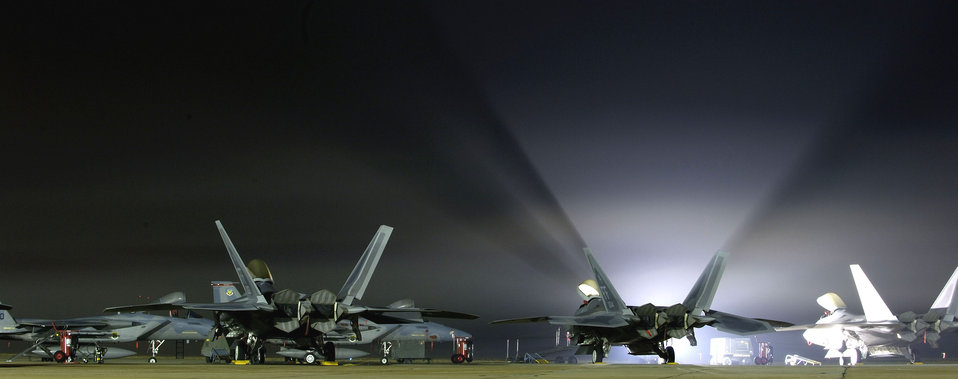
F-22 Raptor ready for its combat role

F-22 Raptors will provide strike packages of aircraft better spherical situational awareness when they pull their first Air Expeditionary Force duty in 2007. The 27th Fighter Squadron at Langley Air Force Base, Va., will fly the first Raptors in combat.